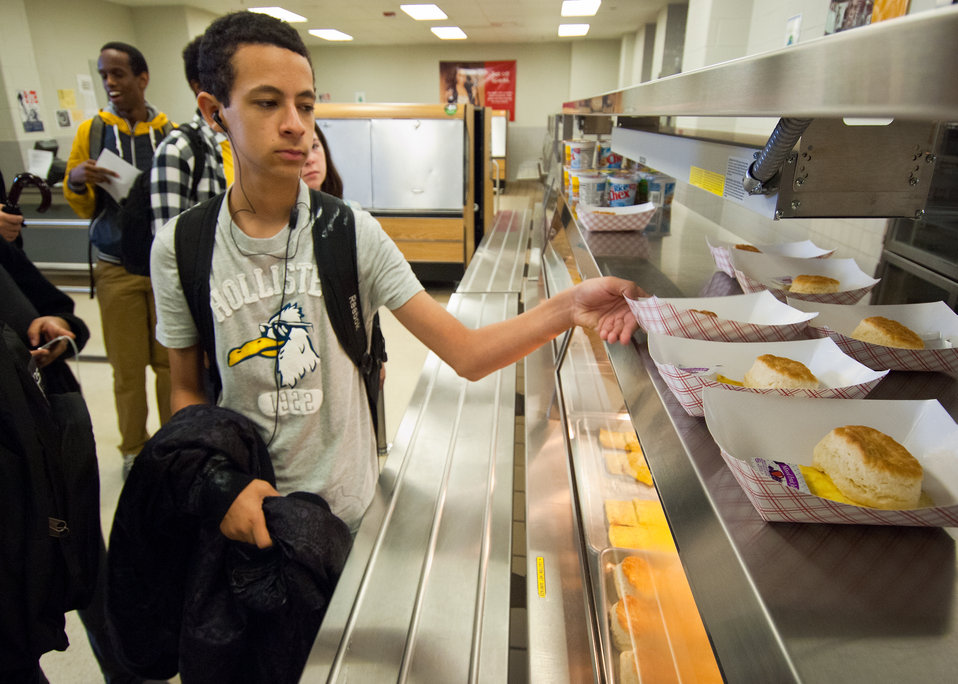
Students at Washington-Lee High School select their breakfast of Scrambled Eggs and Biscuits, on Wednesday, October 19, 2011 prepared by Arlington Public Schools, Food and Nutrition Services. The National School Lunch Program is a federally assisted meal program administered by the United States Department of Agriculture, Food and Nutrition Service operating in public, nonprofit private schools and residential child care institutions. It provides nutritionally balanced, low-cost or free lunches to children each school day.